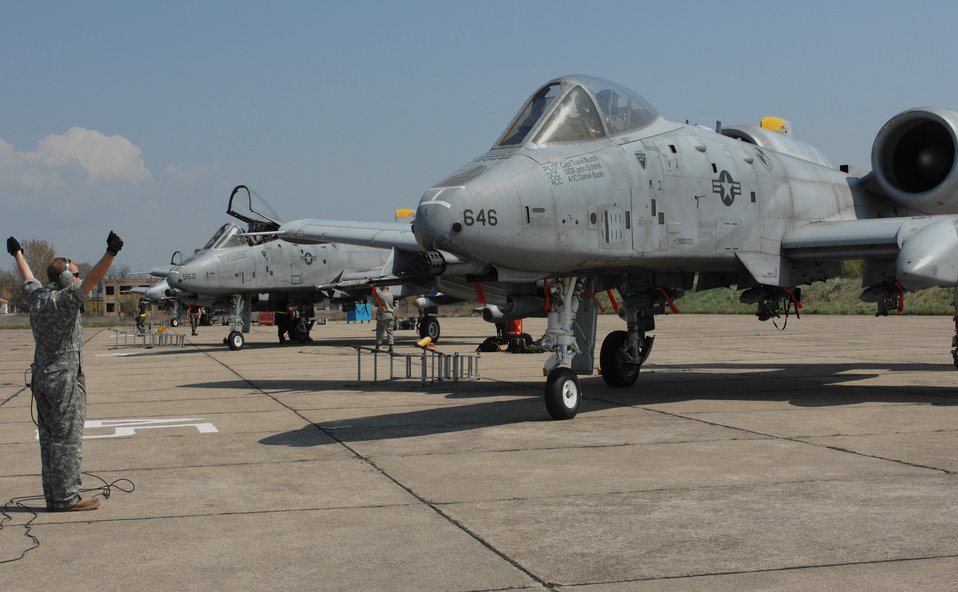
Airmen turn empty Bulgarian hangar into A-10 hub

Airman 1st Class Josh Stubstad marshalls in an 81st Fighter Squadron A-10 Thunderbolt II returning from a training mission April 16 at Bezmer Air Base, Bulgaria. A maintenance squadron team deployed to Bezmer AB to support Exercise Reunion April 2009. Airman Stubstad is a 52nd Equipment Maintenance Squadron crew chief from Spangdahlem Air Base, Germany.